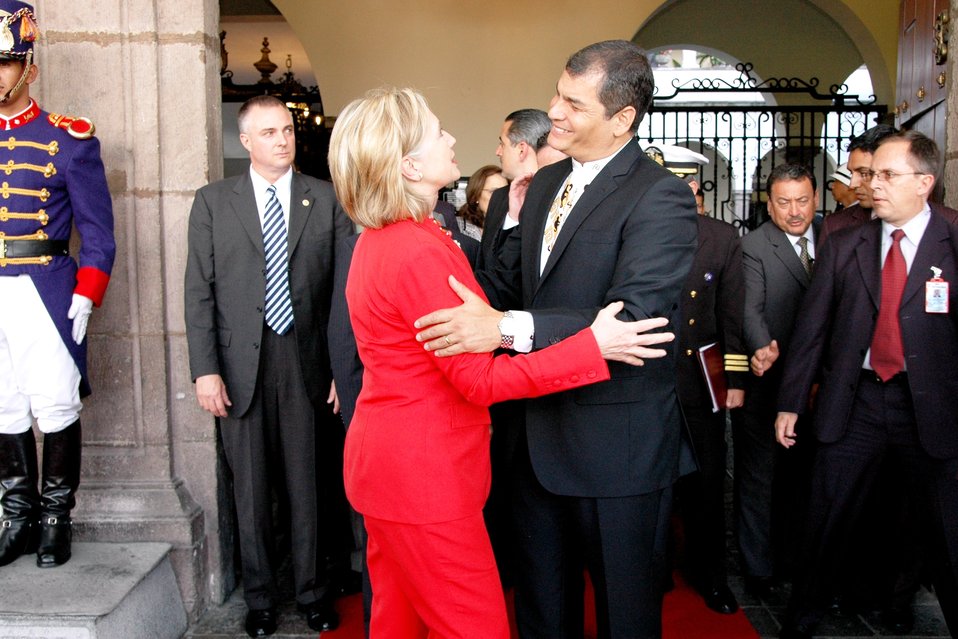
Ecuadorian President Correa and Secreatry Clinton Say Goodbye

Ecuadorian President Rafael Correa and U.S. Secretary of State Hillary Rodham Clinton say goodbye at the entrance to Carondelet Palace in Quito, Ecuador, on June 8, 2010.